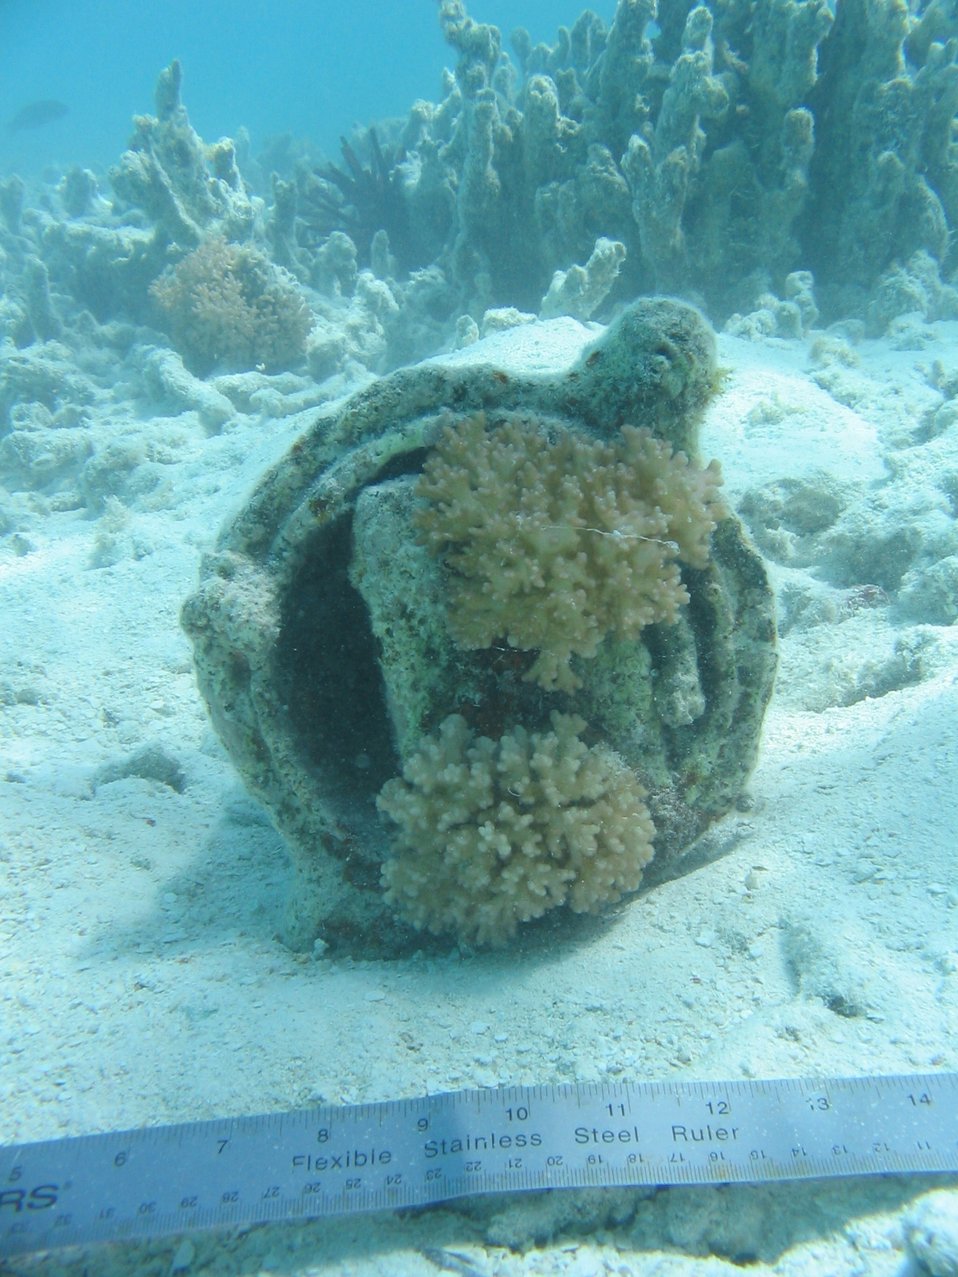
Debris from early Twentieth Century wreck on Pearl and Hermes Reef. Inside the atoll.